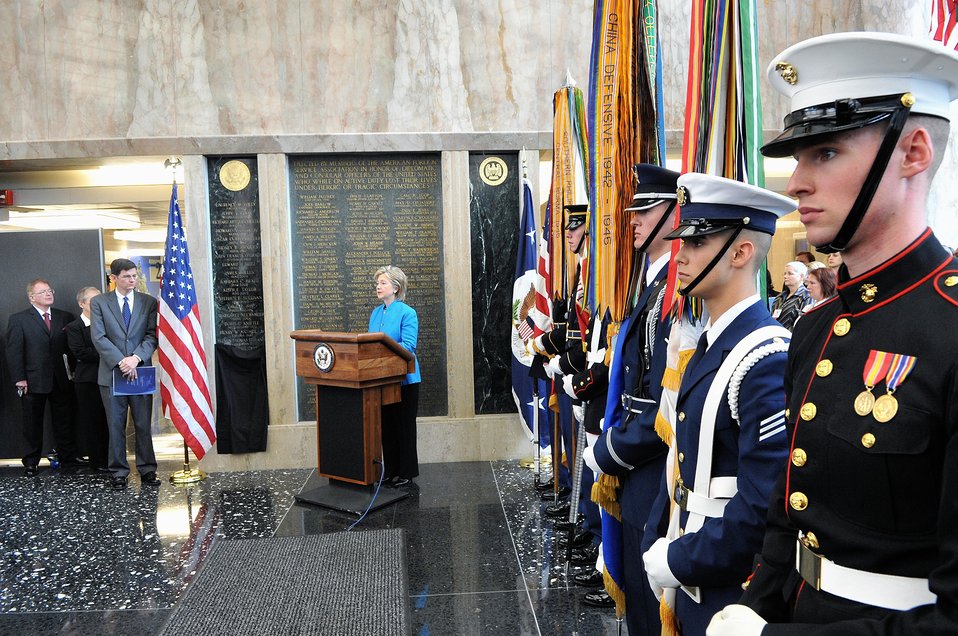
Secretary Clinton on Foreign Affairs Day

U.S. Secretary of State Hillary Rodham Clinton delivers the keynote address of the Town Hall Meeting at Plenary Session of Foreign Affairs Day in the Dean Acheson Auditorium of the U.S. Department of State in Washington, DC May 1, 2009.